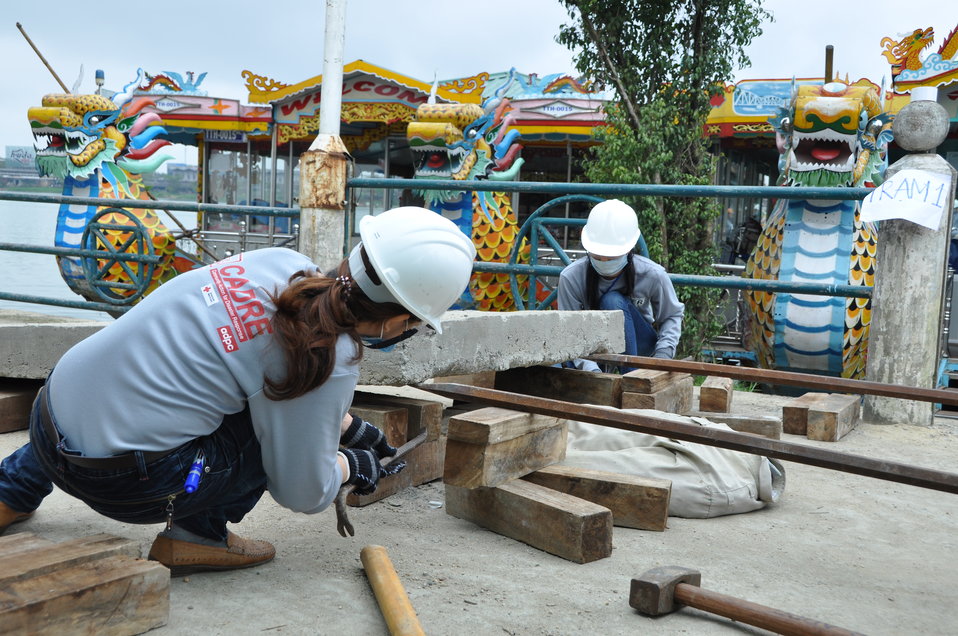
Disaster and Emergency Training Funded by USAID in Hue, Vietnam